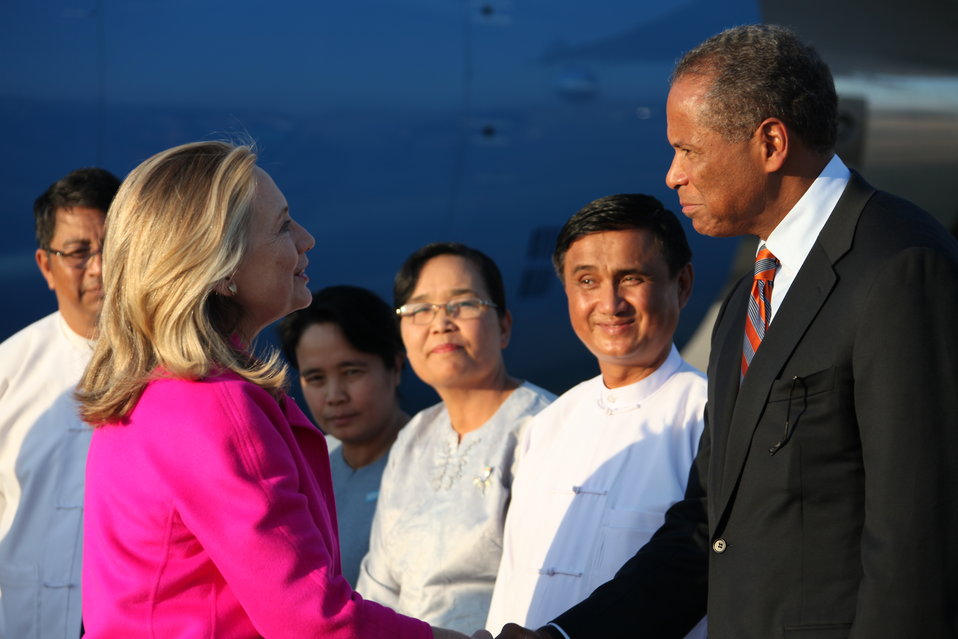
Secretary Clinton Is Greeted By Charge d'Affaires Thurston

U.S. Secretary of State Hillary Rodham Clinton is greeted by the U.S. Embassy in Burma Charge d’Affaires Michael Thurston upon her arrival in Nay Pyi Taw, Burma, on November 30, 2011.